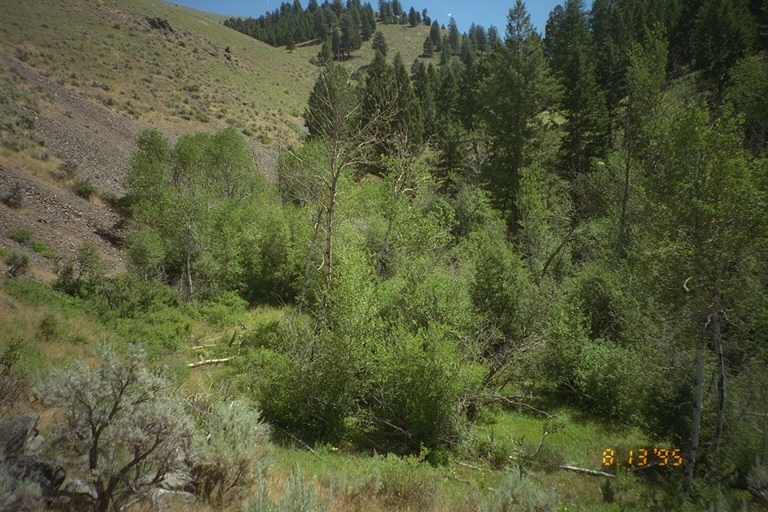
Riparian area Public Lands Salmon Field Office UCSC Upper Columbia Salmon Clearwater District